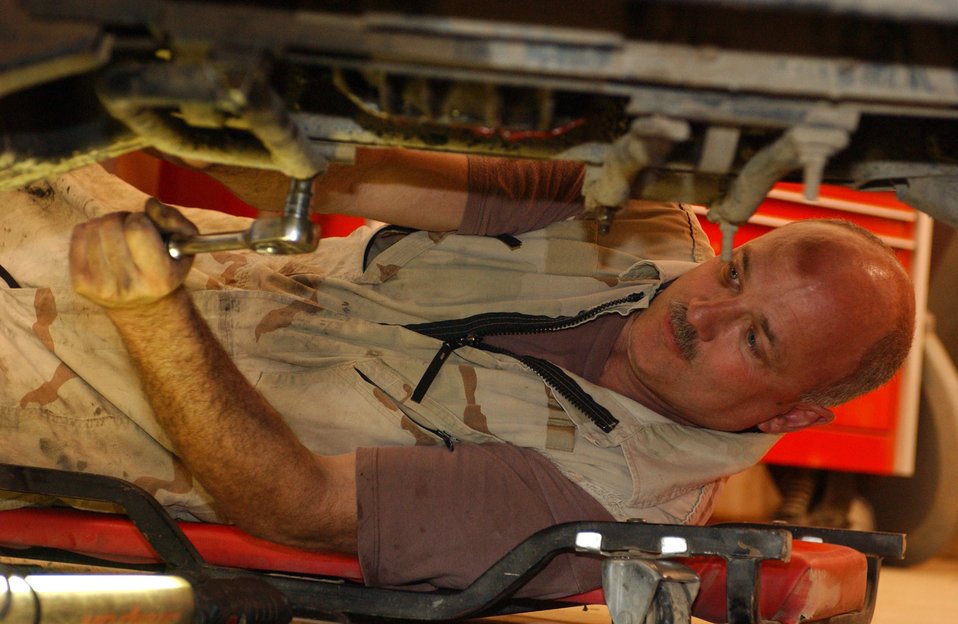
Rough conditions take toll on vehicles

Staff Sgt. Rick Adams tightens a Humvee?s front brake support brackets at Ali Base, Iraq. Sergeant Adams is assigned to the 407th Expeditionary Logistics Readiness Squadron vehicle maintenance flight. He is deployed from the Pennsylvania Air National Guard's 171st Air Refueling Wing.